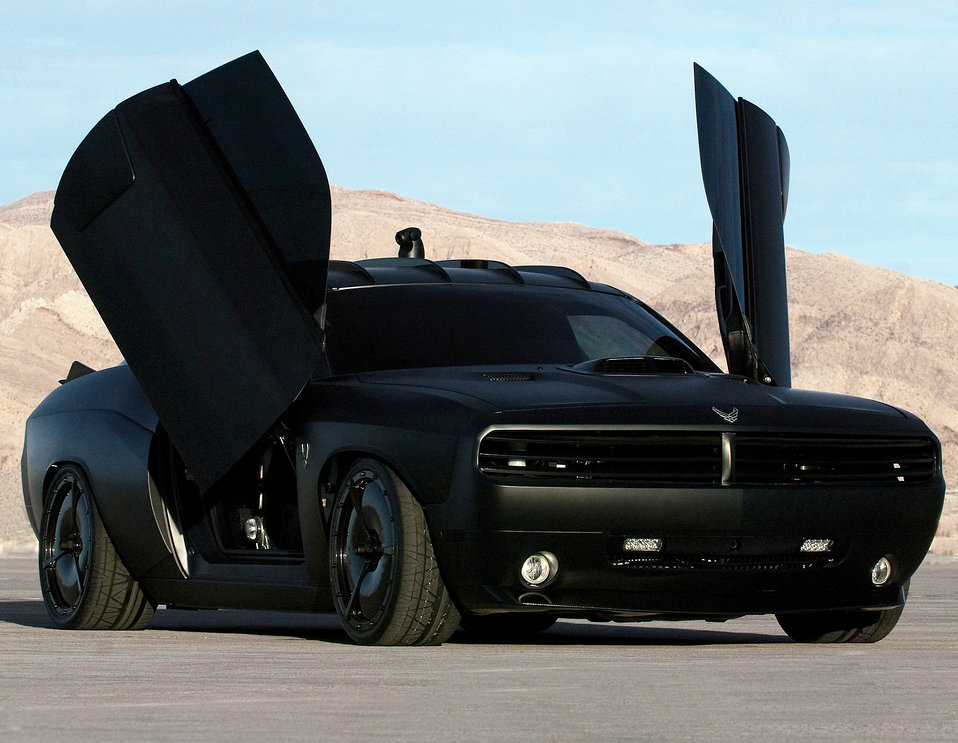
Super Car Tour

The stealth-black Air Force Challenger 'Vapor' features a biometric access to open the vertical doors, a custom stealth body kit with jet enhancements and a carbon fiber exterior trim. Other exterior components include one-off carbon fiber wheels, a custom stealth exhaust mode that allows the vehicle to run in complete silence or the headers can be opened facilitate the aggressive sound of the engine. The vehicle features a shaker hood, radar-absorbing paint, proximity sensors and a 360-degree camera with a quarter-mile range. The Vapor is one of the Air Force's newest mobile marketing assets and will be touring high schools and a variety of Air Force sponsored events as part of the 2009 Super Car Tour.